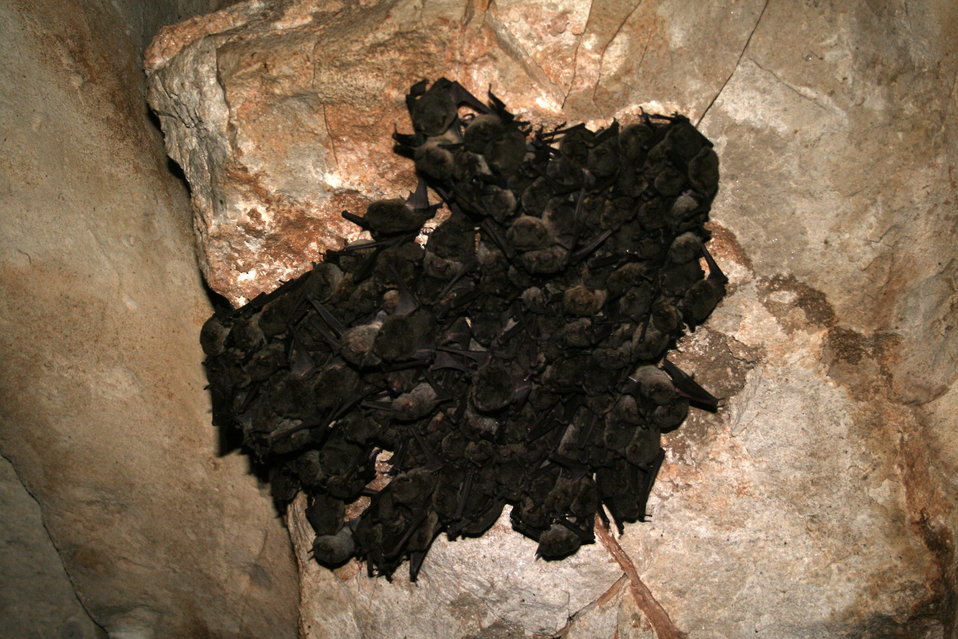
Cluster of gray bats

Cluster of hibernating gray bats (Myotis grisescens)